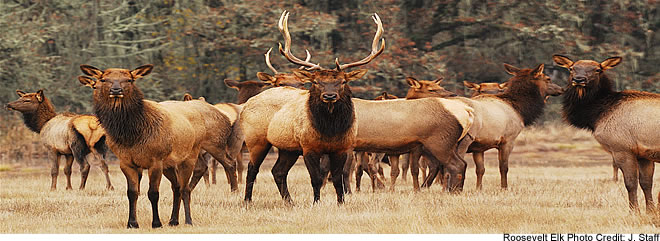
Roosevelt Elk - Wiiliam L Finley NWR

A herd of Roosevelt elk can be found in the bottomland forests or farm fields on the Refuge.